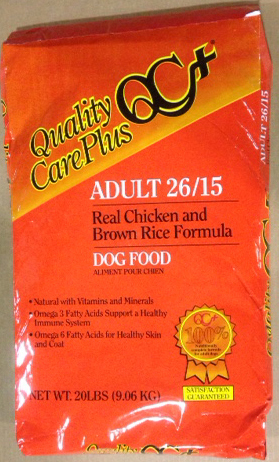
RECALLED – Dog Food, Cat Food

February 5, 2014 – Product Recall – Pro-Pet LLC Recalls a Limited Number of Dry Dog and Cat Foods Due to Possible Salmonella Contamination.